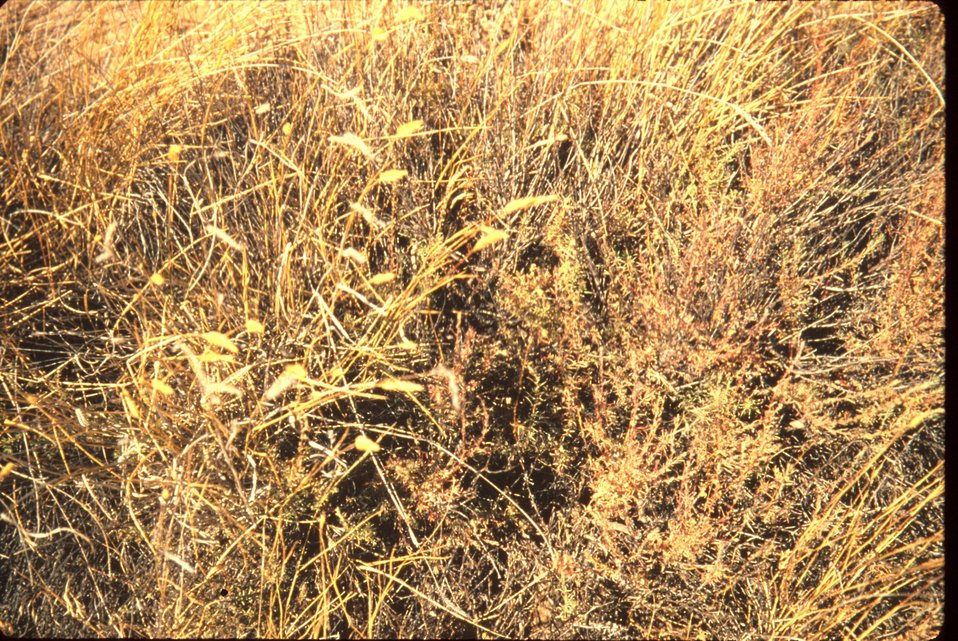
Kochia noxious weed